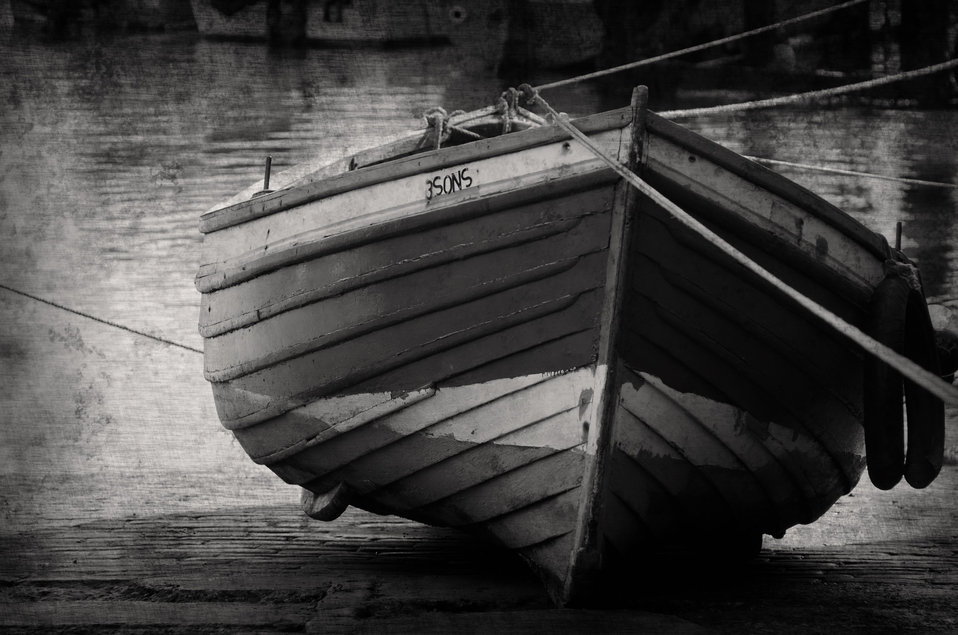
Ship in the harbor.